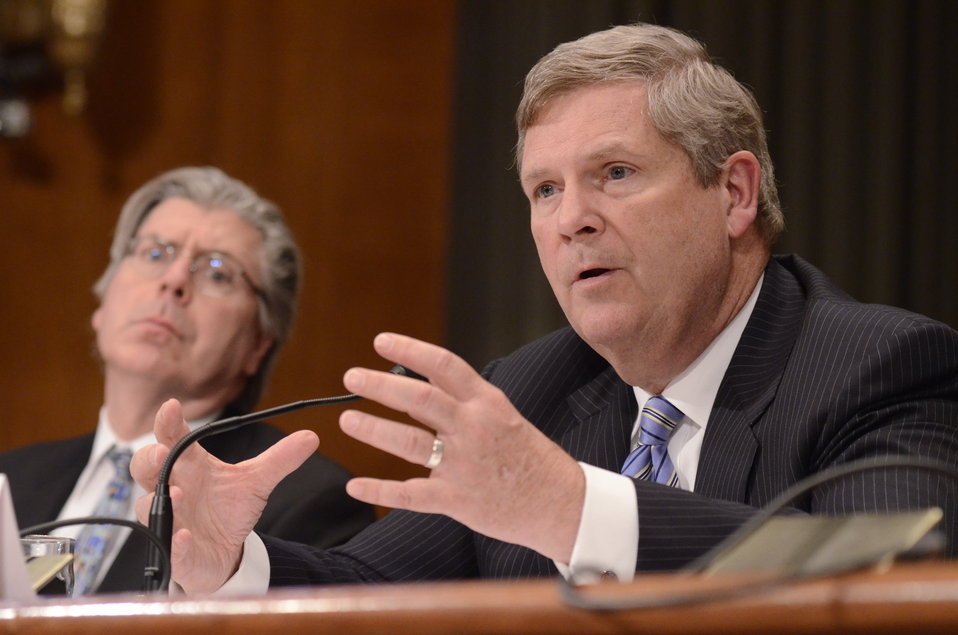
Agriculture Secretary Tom Vilsack testifies before the Senate Agriculture Appropriations Committee on the fiscal year 2013 budget at the Dirksen Senate Office Building in Washington, D.C., on Thursday, March 29, 2012.